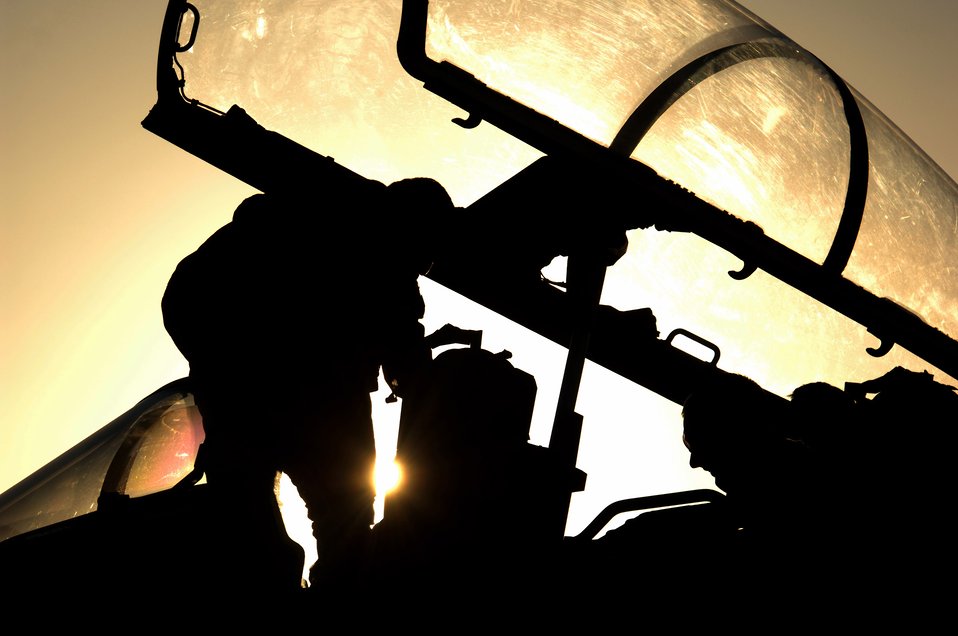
Airmen support PACAF operations while deployed

KADENA AIR BASE, Japan -- F-15E Strike Eagle pilots from the 391st Expeditionary Fighter Squadron return after a mission. About 300 Airmen from Mountain Home Air Force Base, Idaho, are here supporting U.S. Pacific Command operations as part of an air and space expeditionary force tasking.